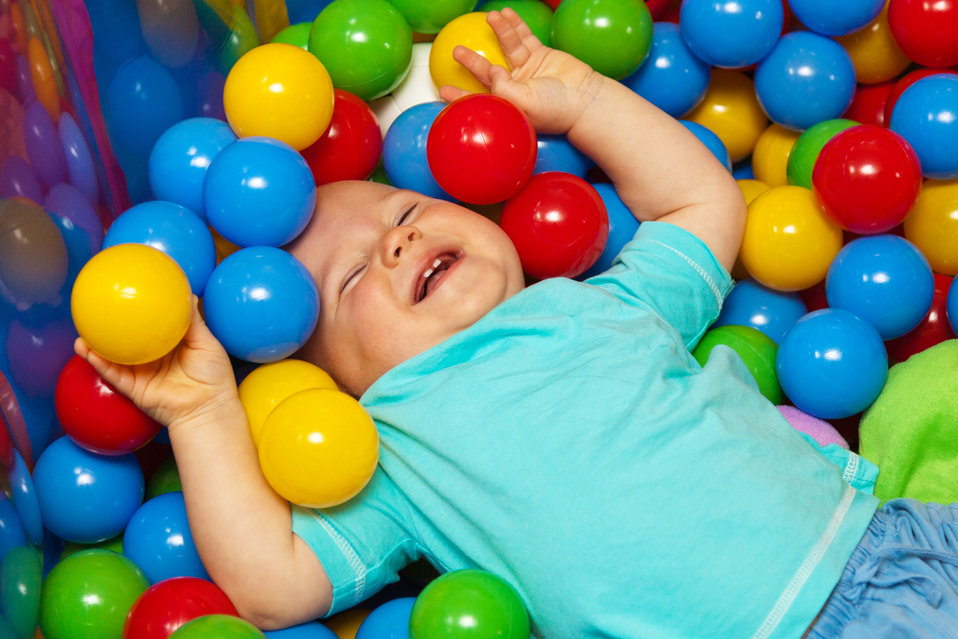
Baby with play balls

Baby is having fun with play balls.